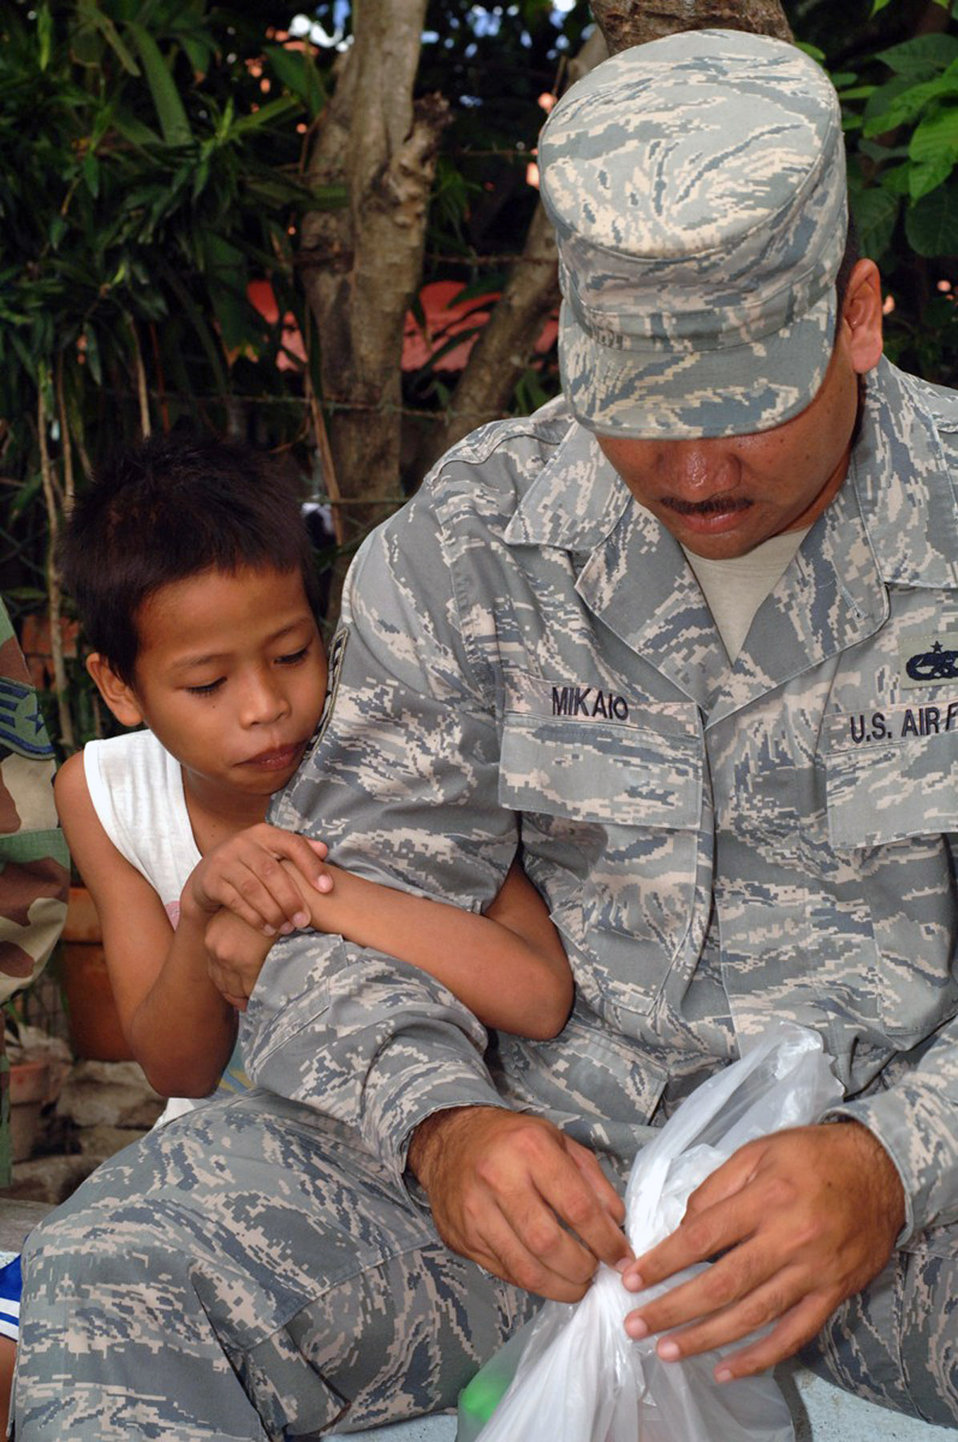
Airmen spread goodwill during Balikatan 2009

Tech. Sgt Jeffery Mikaio makes a new friend during a visit to a Filipino orphanage where more than 20 Airmen donated schools supplies, athletics equipment and toys April 25 at Angeles City, Philippines. Sergeant Mikaio is assigned to the 63rd Fighter Squadron from Luke Air Force Base, Ariz.